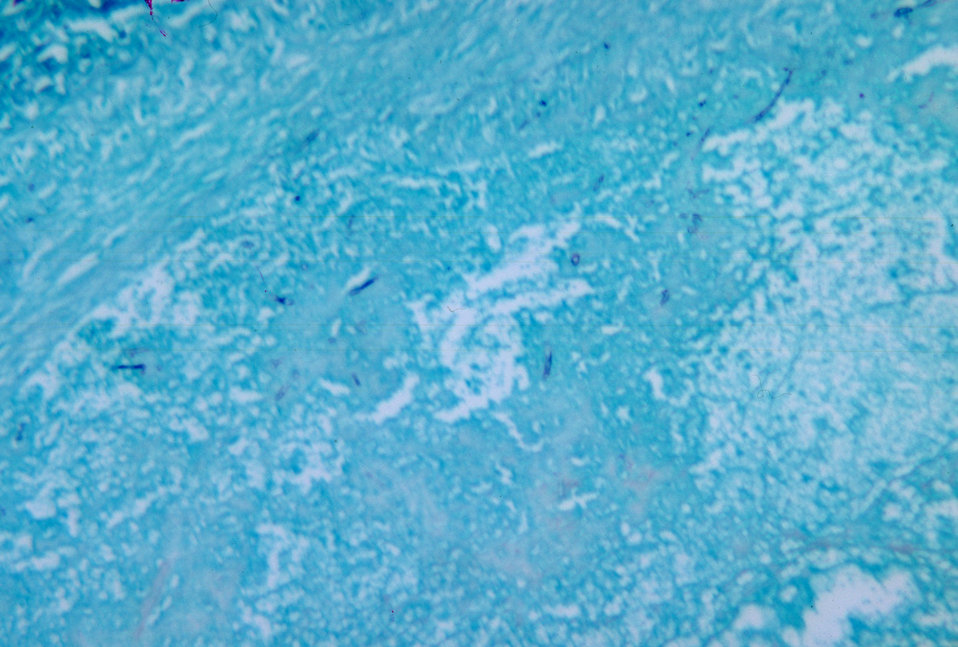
Note the histopathologic changes of the lung in a case of zygomycosis using methenamine silver stain technique.